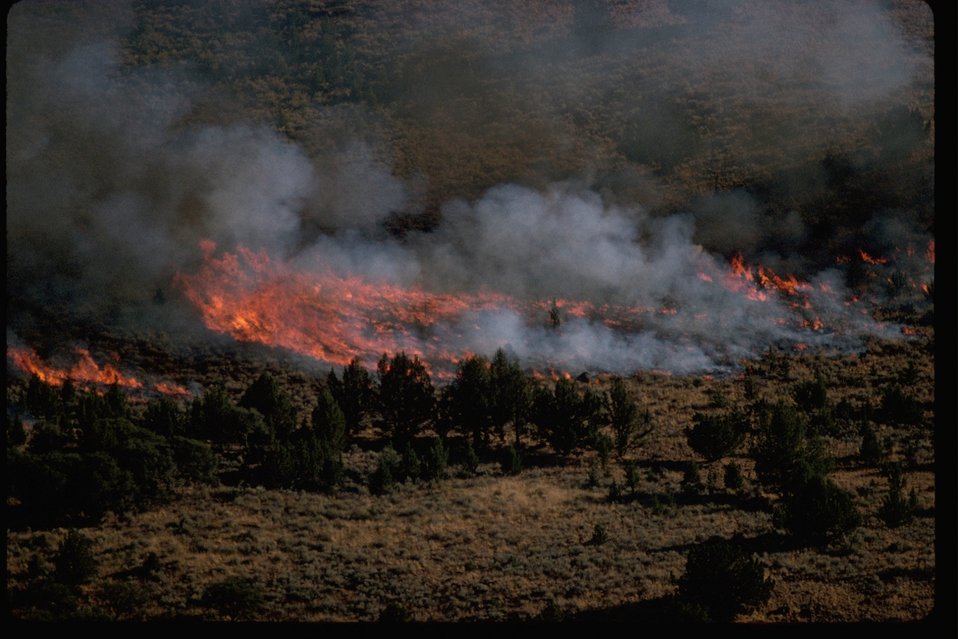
Picture taken from South Loop road in Rooster Comb. A prescribed burn in the Ankle Creek/Big Indian Creek area.